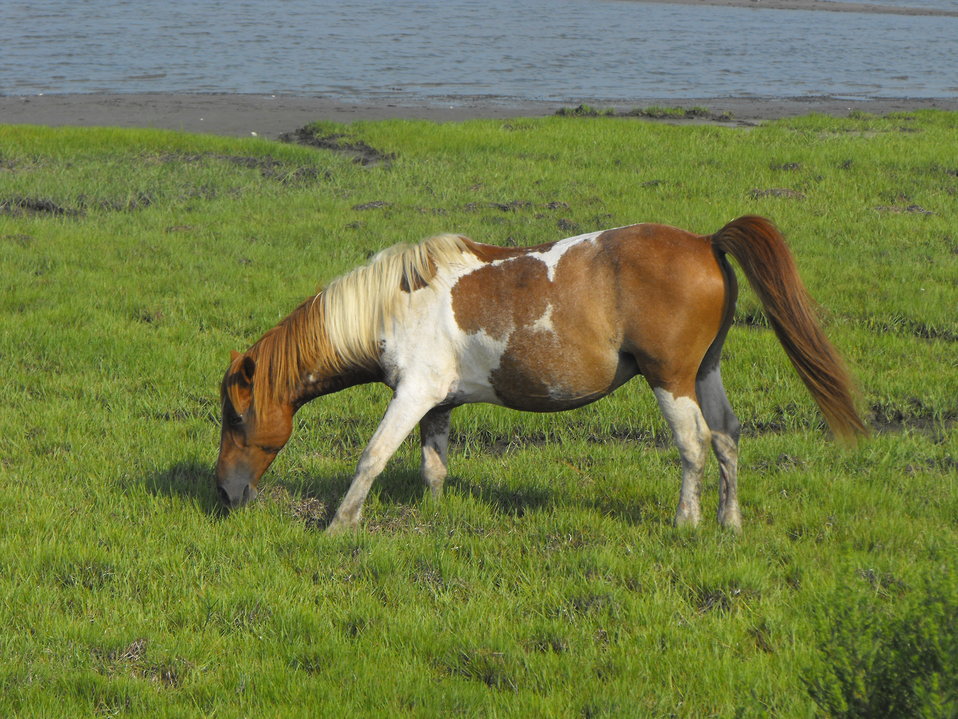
Chincoteague pony

A Chincoteague pony off the Service Road at Chincoteague National Wildlife Refuge / Assateague Island National Seashore.